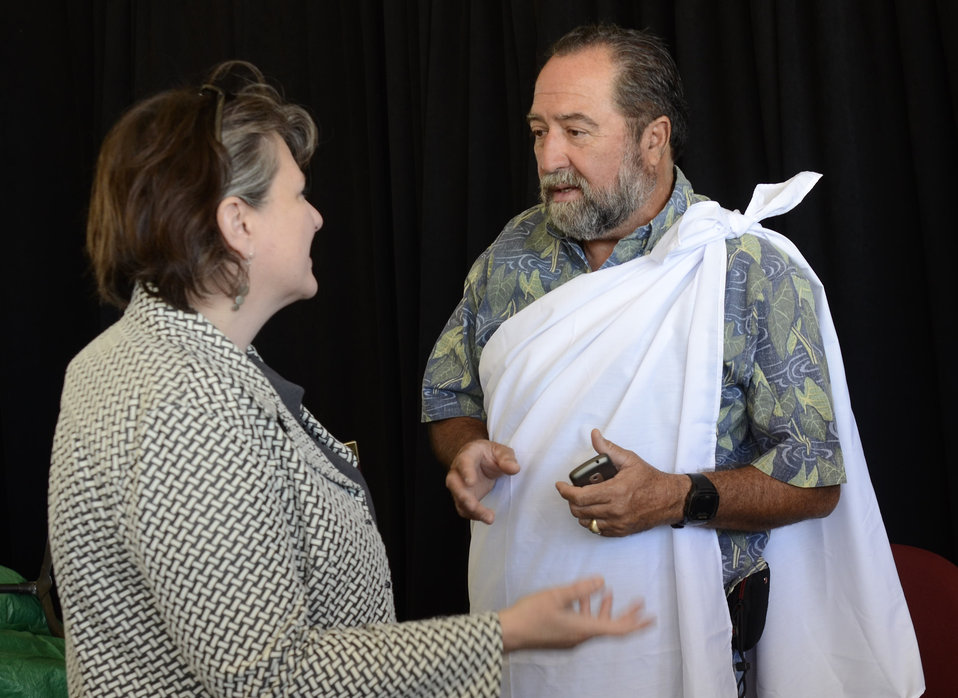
Agriculture Deputy Secretary Kathleen Merrigan talks with Molokai, HI Cooperative State Research Service County Extension Agent and member of the University of Hawaii's Tuahine Troupe Glenn Teves at the opening ceremony for the 2012 Smithsonian Folklife Festival in Washington, D.C. on Wednesday, June 27, 2012. This year’s festival features three themes; “Creativity and Crisis” celebrates the 25th anniversary of the AIDS Memorial Quilt, “Citified,” explores the rich culture and community of neighborhoods east of the Anacostia, and the third “Campus and Community” celebrates 150 years of USDA and the Land-Grant university system.